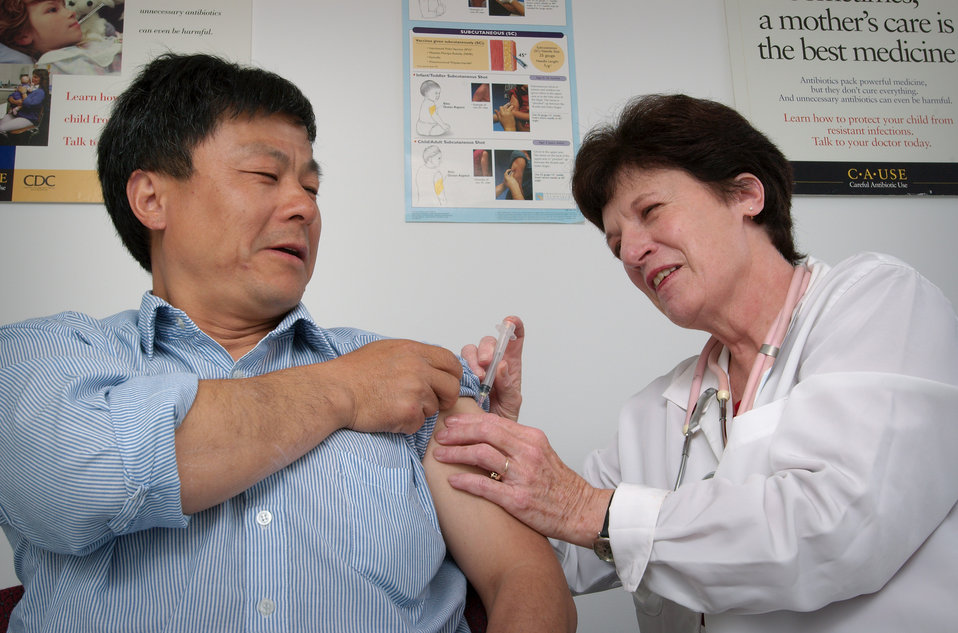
Depicted in this 2006 image, this man was receiving an intramuscular immunization in his left shoulder muscle. He was facilitating the procedure by lifting up his sleeve, while the nurse admistered the vaccine. With her free hand, the nurse stabilized the injection site.